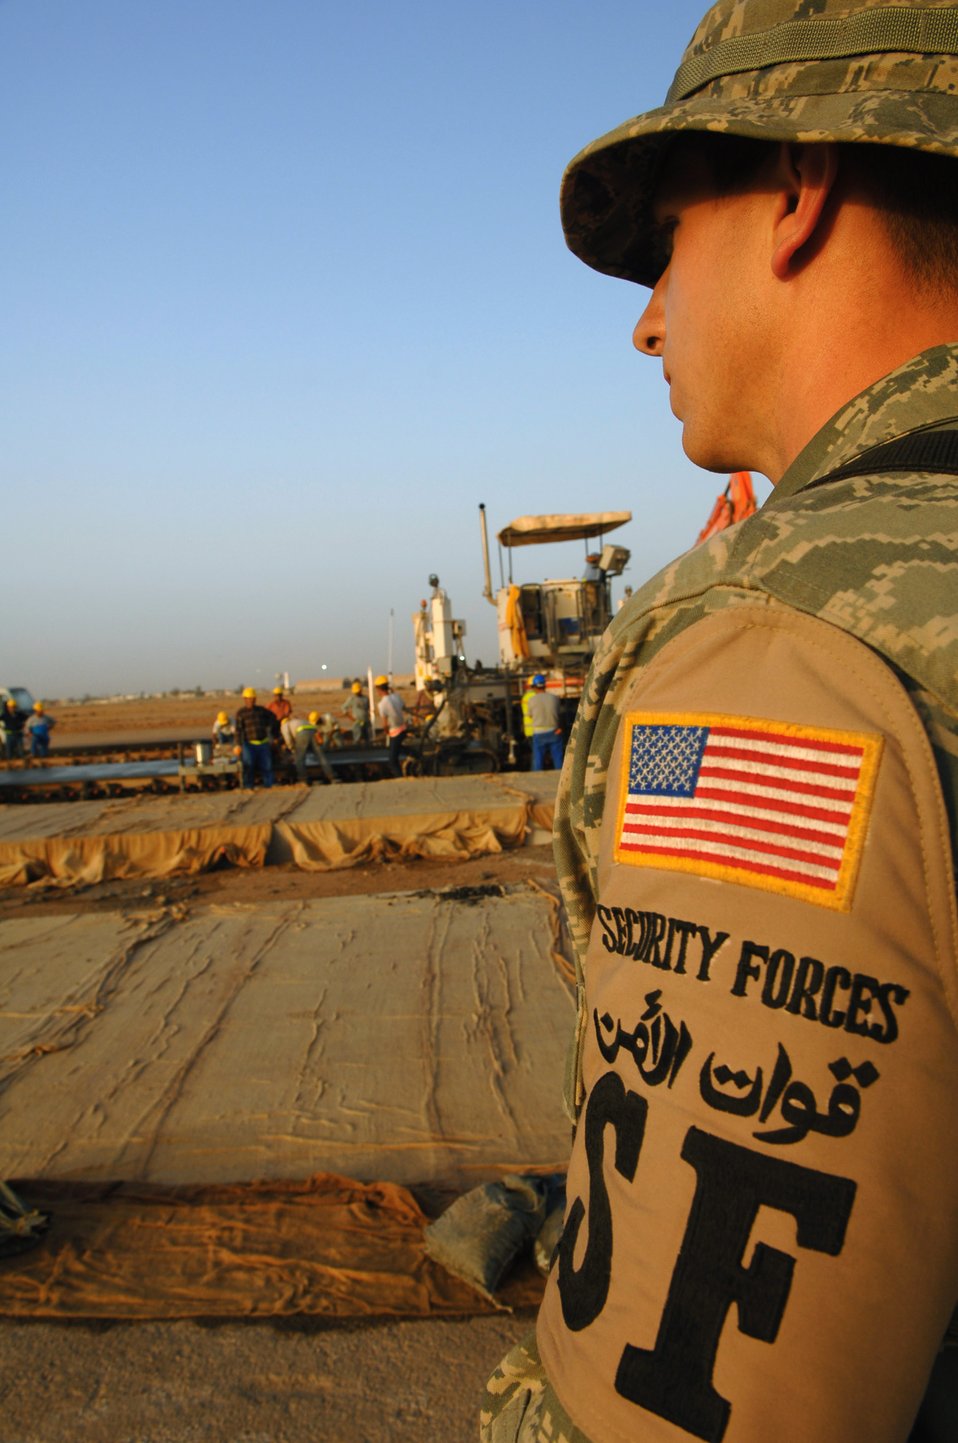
Maintaining a secure presence

Airman 1st Class Jonathan Wohlford watches over third country national workers March 24 at a construction site at Balad Air Base, Iraq. Keeping an eye out for any compromising activities is a critical job to keep Airmen safe.